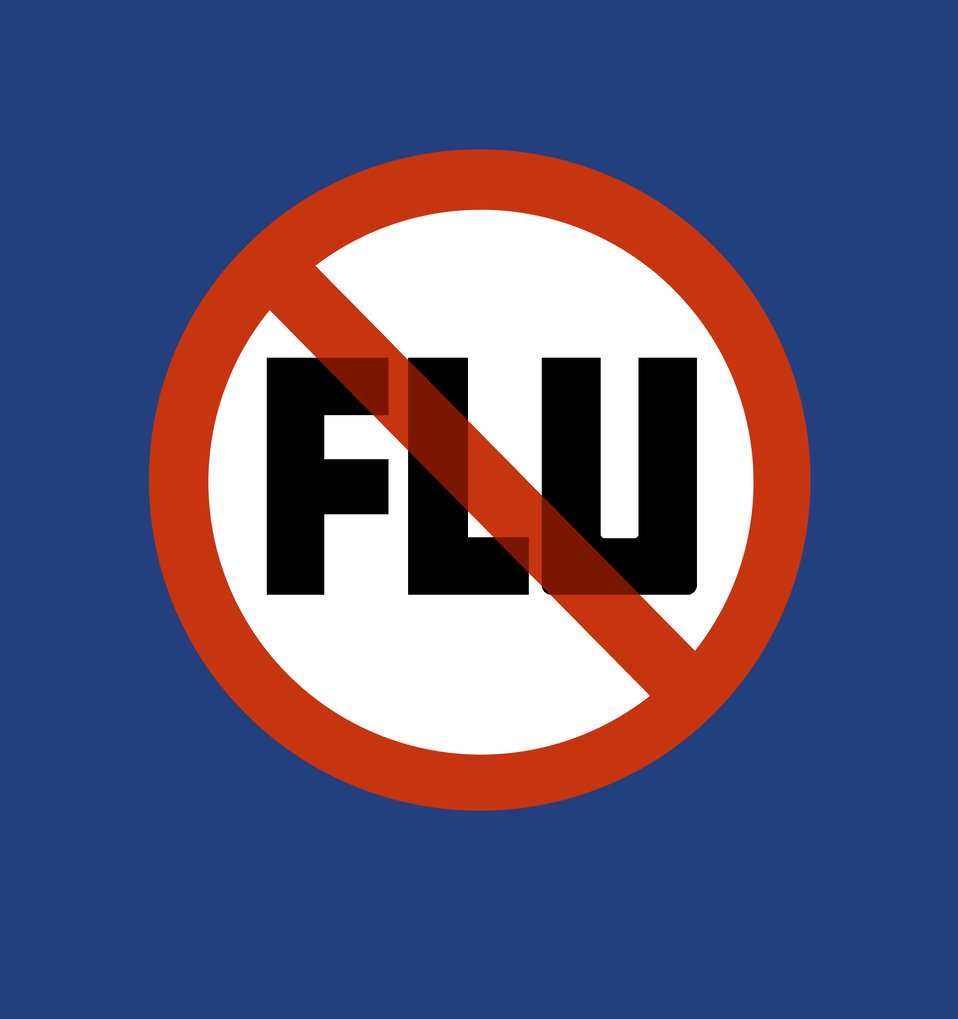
This signage represented the national symbol for the 1976 National Influenza Immunization Program.